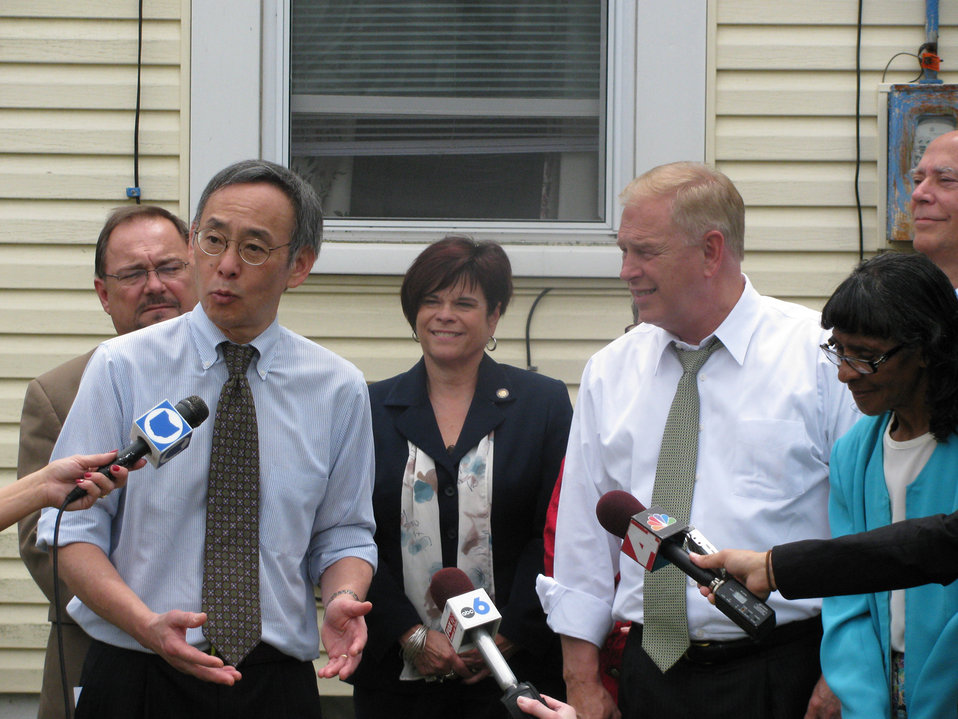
ohio6